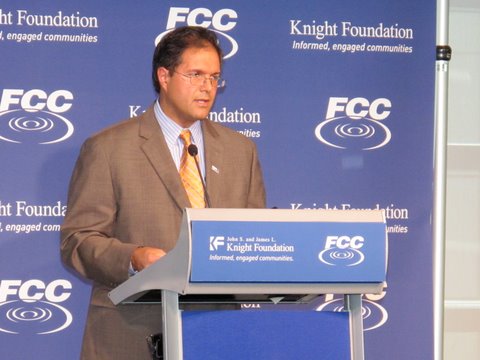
Irvin Aviles got his A Plus and Network Plus certifications at no cost through Per Scholas, part of the Digital Inclusion Showcase at America's Digital Inclusion Summit.